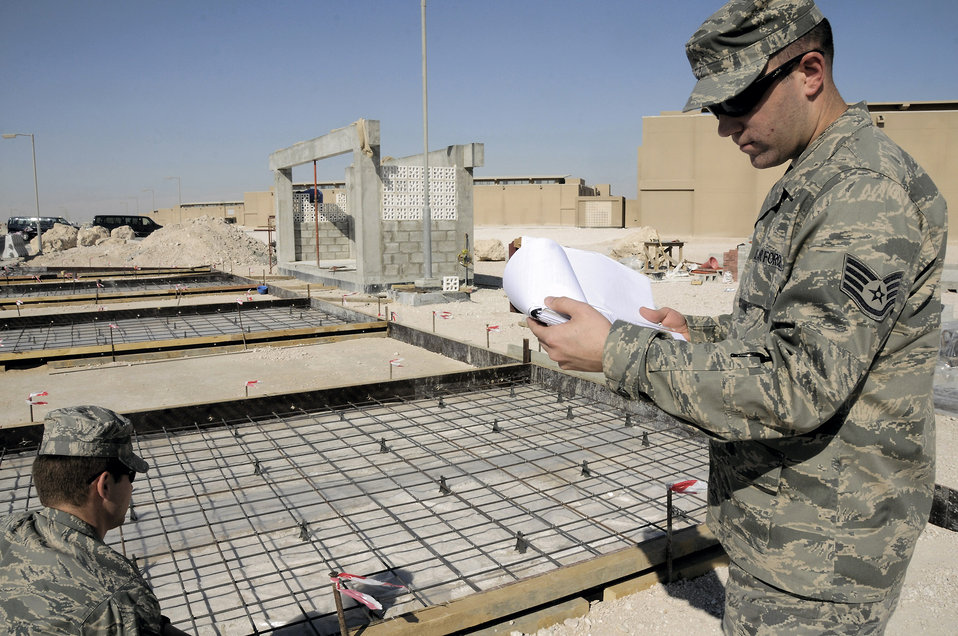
Airmen procure mission success

Staff Sgt. Ryan Burk verifies a specification of a contracting job while Staff Sgt. Doug Keeler reviews the specifications and drawings of a new bus stop Dec. 4 at an air base in Southwest Asia. Both are contracting officers assigned to the 379th Expeditionary Contracting Squadron. Sergeant Burk, a native of Fuquay-Varina, N.C., is deployed from Pope Air Force Base, N.C. Sergeant Keeler, a native of Albany, N.Y., is deployed from Little Rock AFB, Ark.